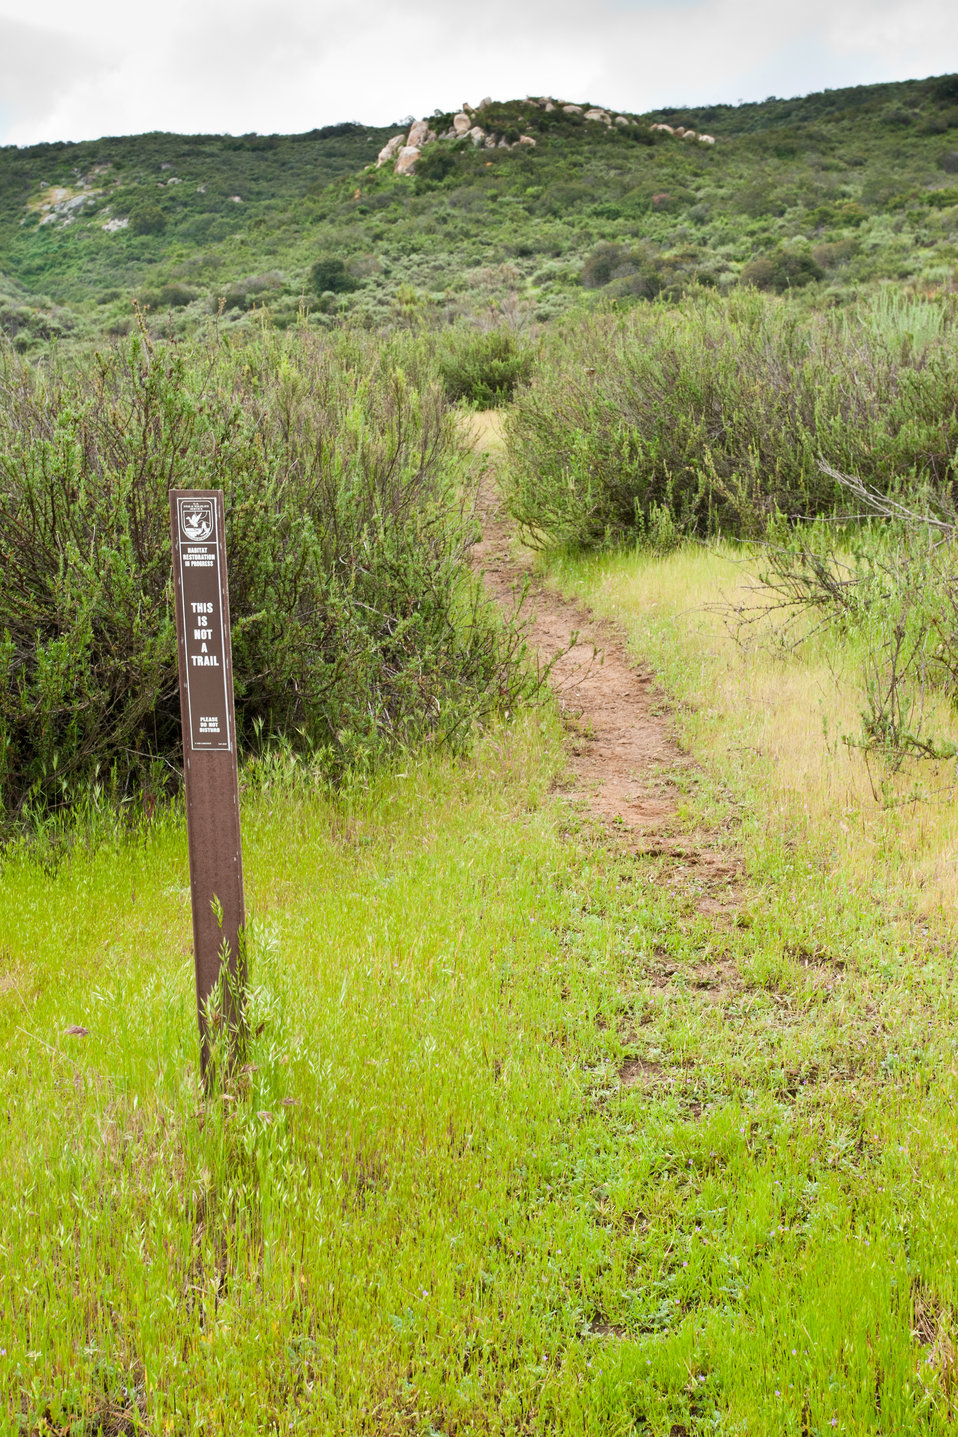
Recovering trails on the Refuge during winter